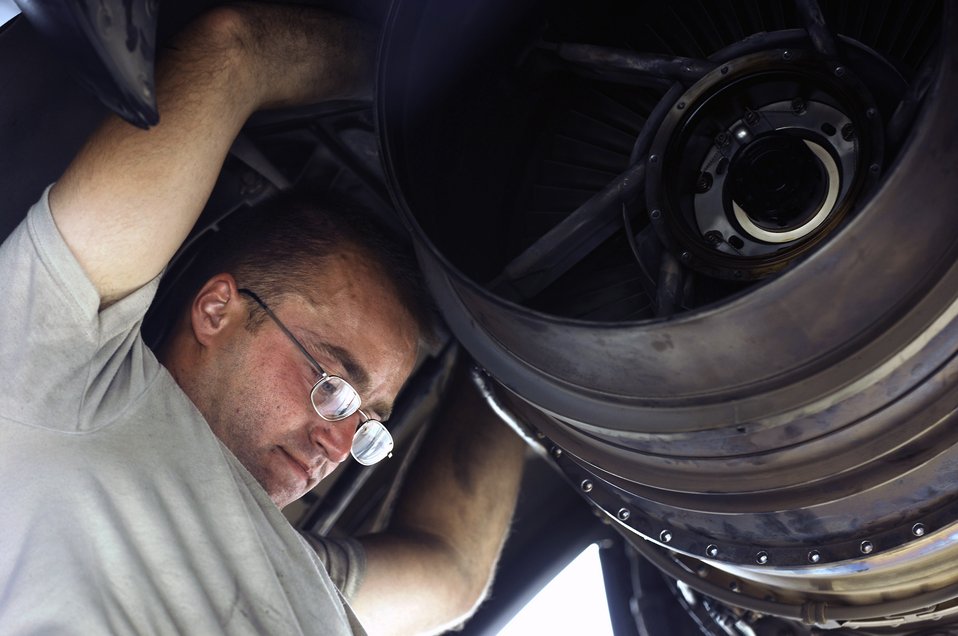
An ounce of prevention

Senior Airman Sean Sweeney unscrews a bolt from the rear bearing support on a C-130 Hercules engine during a post-flight inspection Aug. 22 at Joint Base Balad, Iraq. Airman Sweeney is an aerospace propulsion technician with the 777th Expeditionary Aircraft Maintenance Squadron deployed from Little Rock Air Force Base, Ark. His hometown is Fort Worth, Texas.